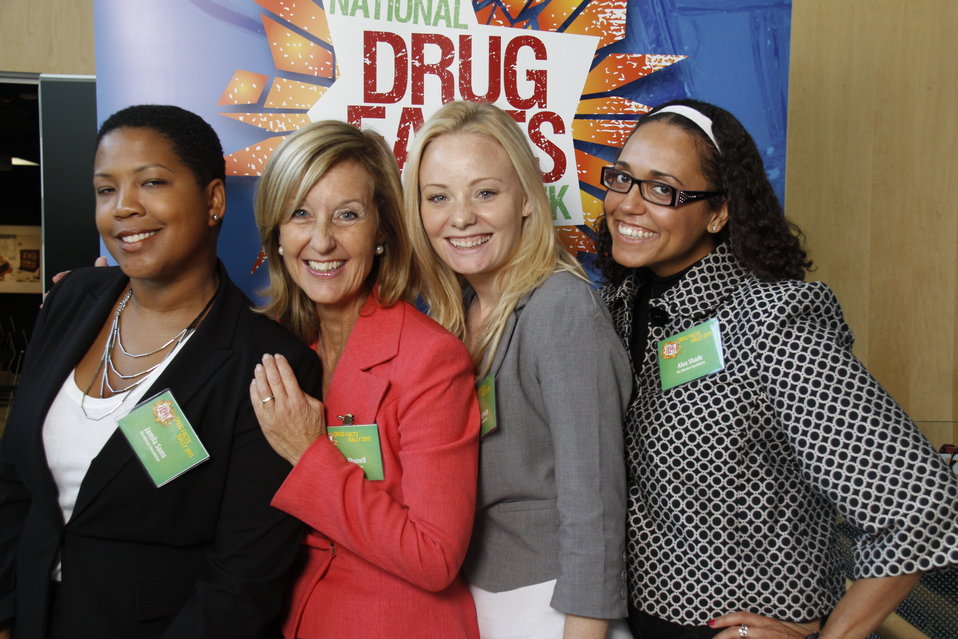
NDFW Mentor Event